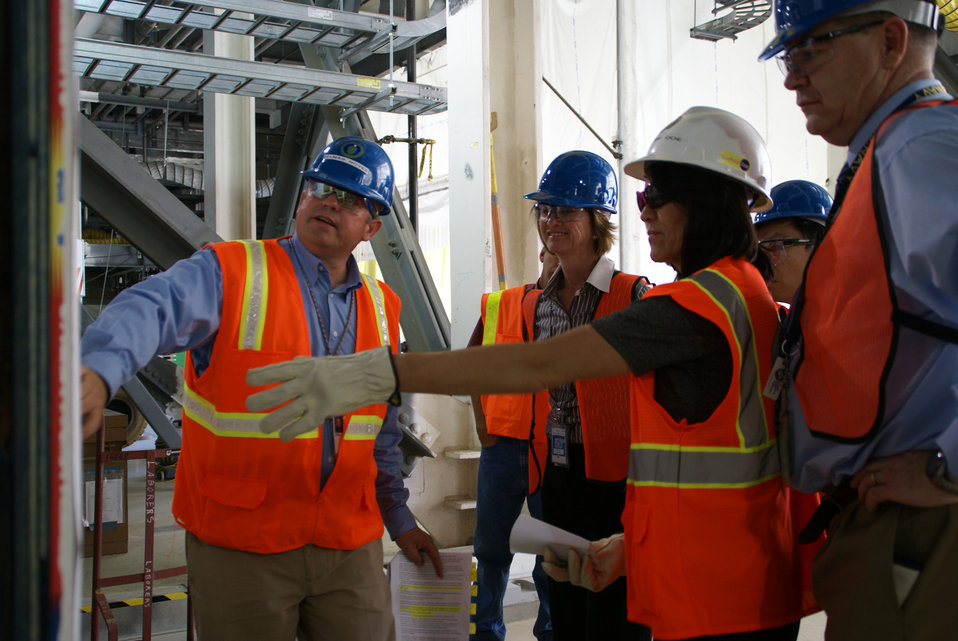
UNDERSECRETARY JOHNSON AT VIT PLANT 2009

Former DOE Undersecretary Kristina Johnson tours the ongoing construction of the Waste Treatment Plant at Hanford.